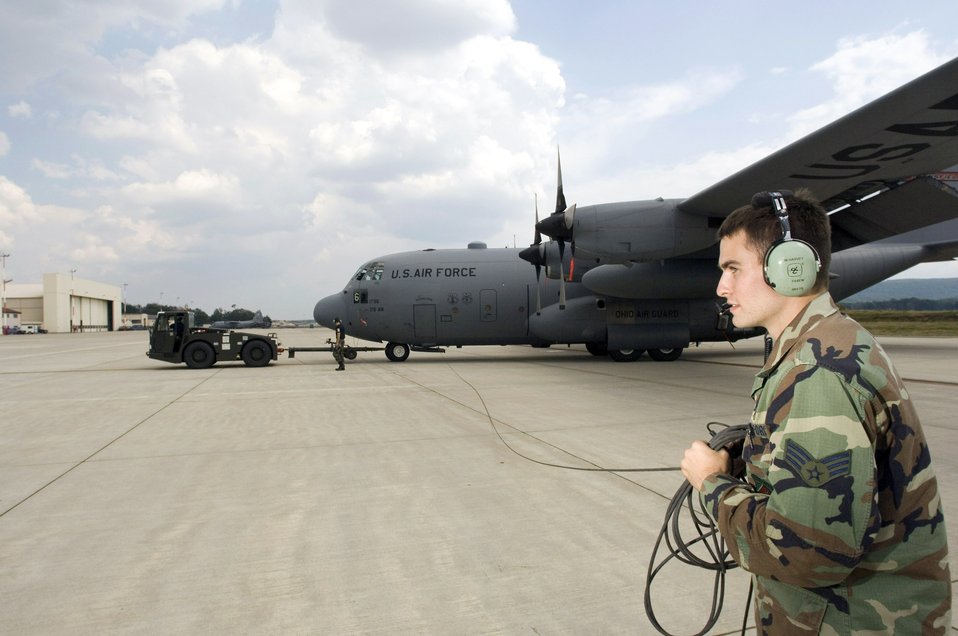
In tow

Senior Airman William Harvey walks next to the wing of a C-130 Hercules as it is towed to its parking position on Thursday, July 13, at Ramstein Air Base, Germany. Airman Harvey is an electric counter measure specialist on temporary duty for six weeks with the Ohio Air National Guard's 179th Airlift Wing from Mansfield, Ohio. The C-130 unit is flying sorties throughout Europe, Asia and Africa while at Ramstein.